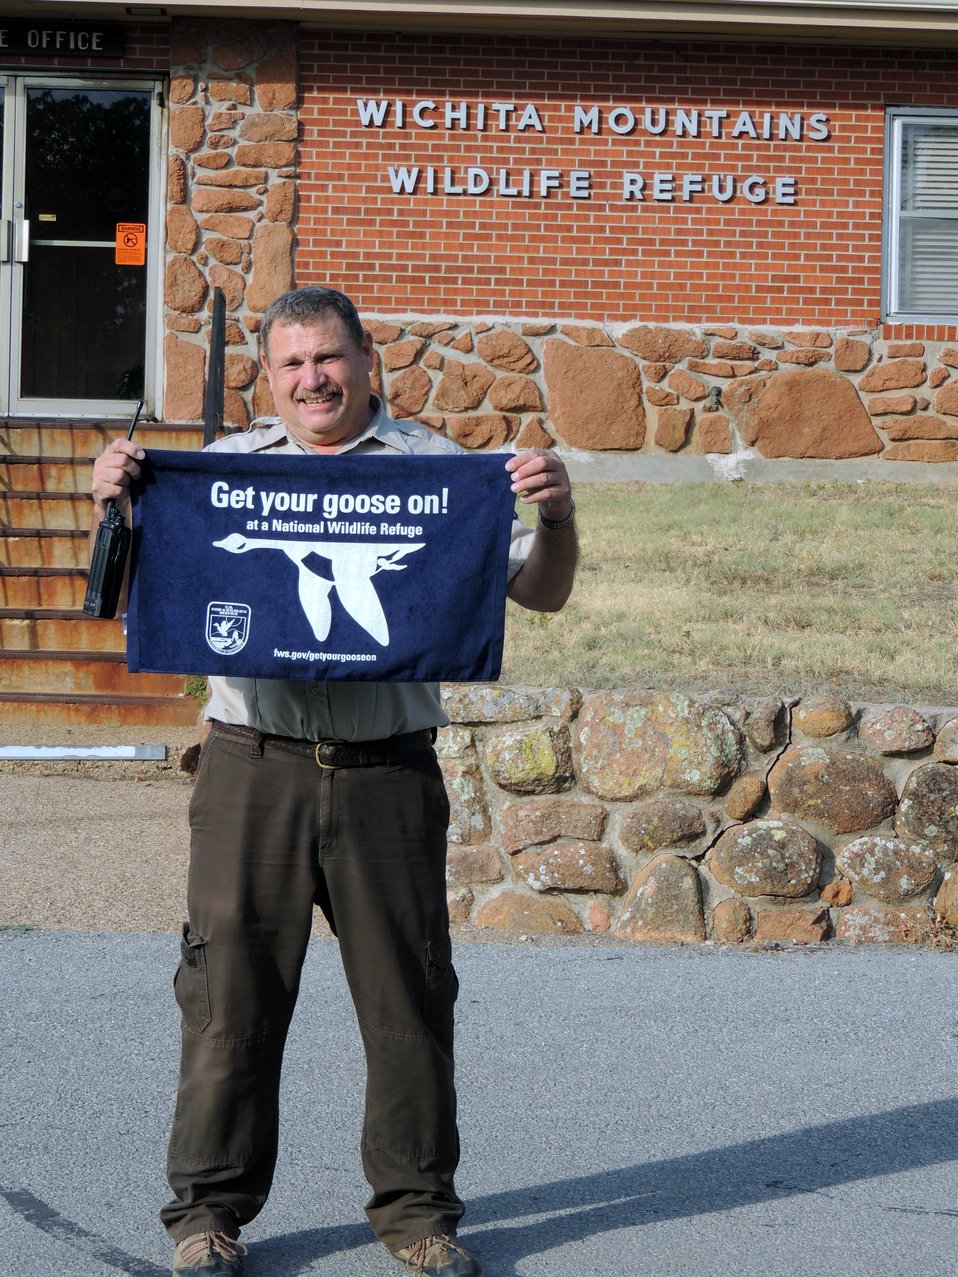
Get Your Goose On!

Wichita Mountains National Wildlife Refuge in Oklahoma.